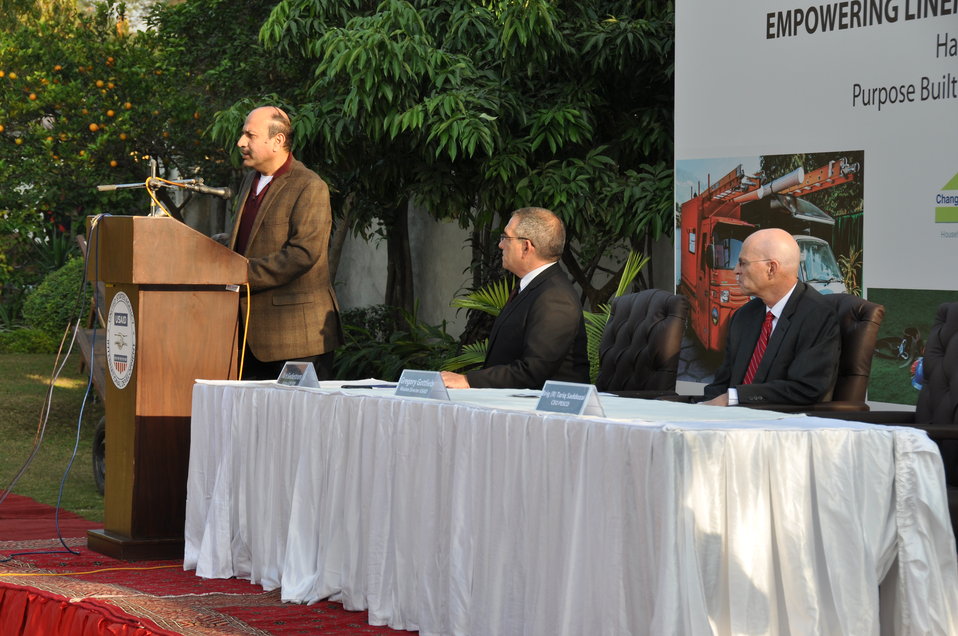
United States Government Strengthens PESCO Field Operations 14